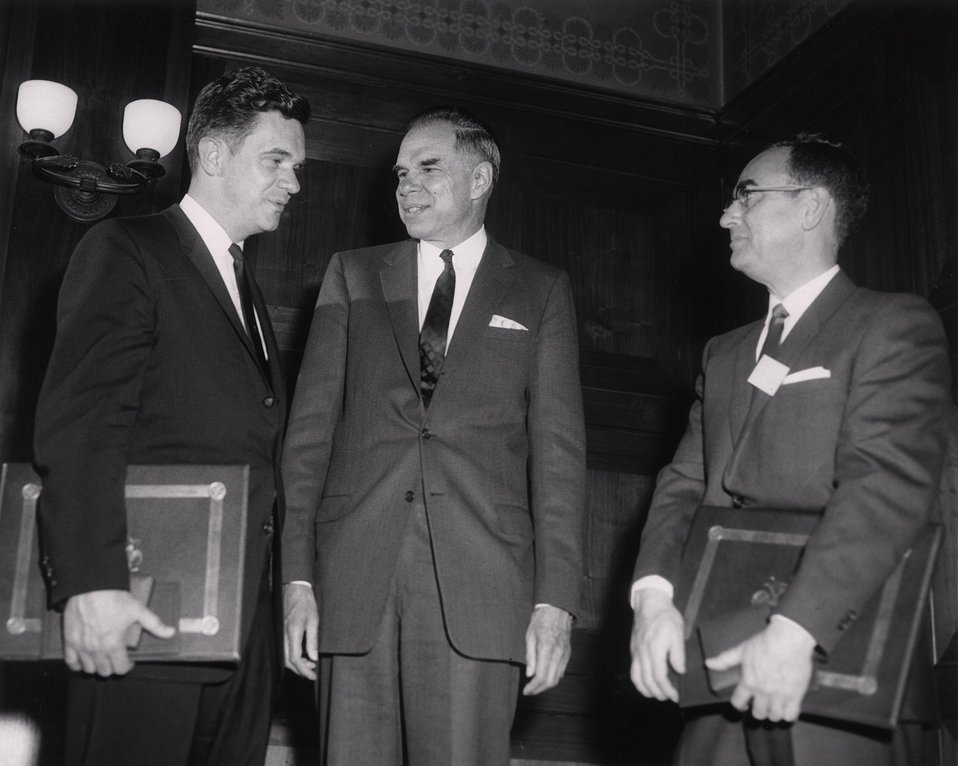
E. O . Lawrence Award Ceremony. National Academy of Sciences. April 29, 1965. Dr. Seaborg,Dr. Taylor, and Dr. Crown.